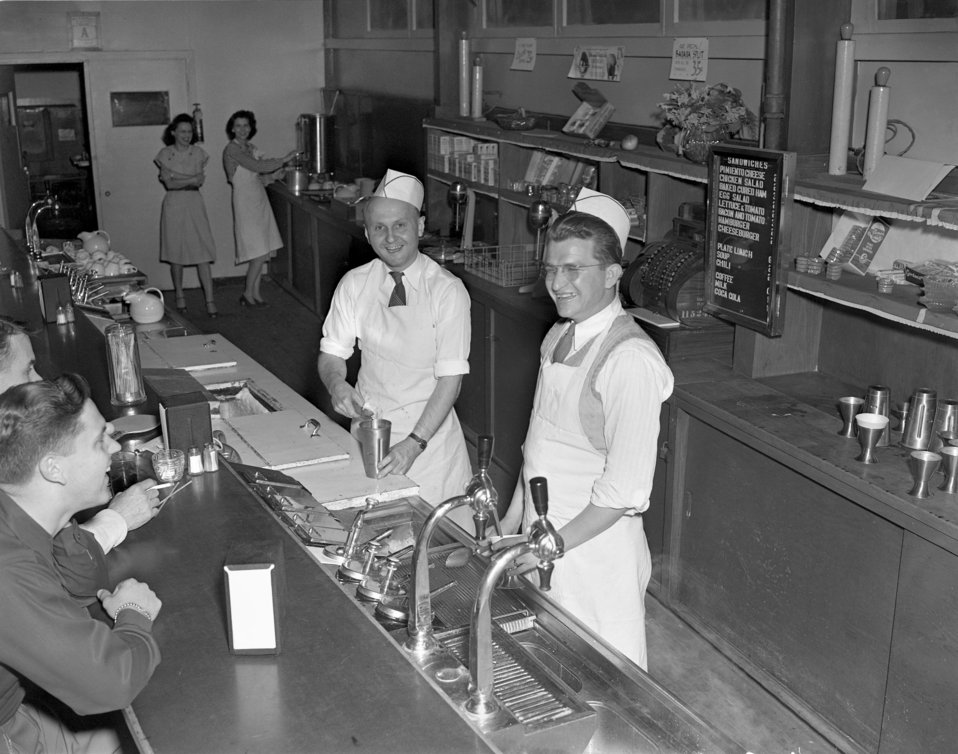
Soda Fountain Counter Oak Ridge 1947

3428-1 DOE photo Ed Westcott 4-1947 L to R Bill Pollock and Lee Gaskin Oak Ridge Tennessee